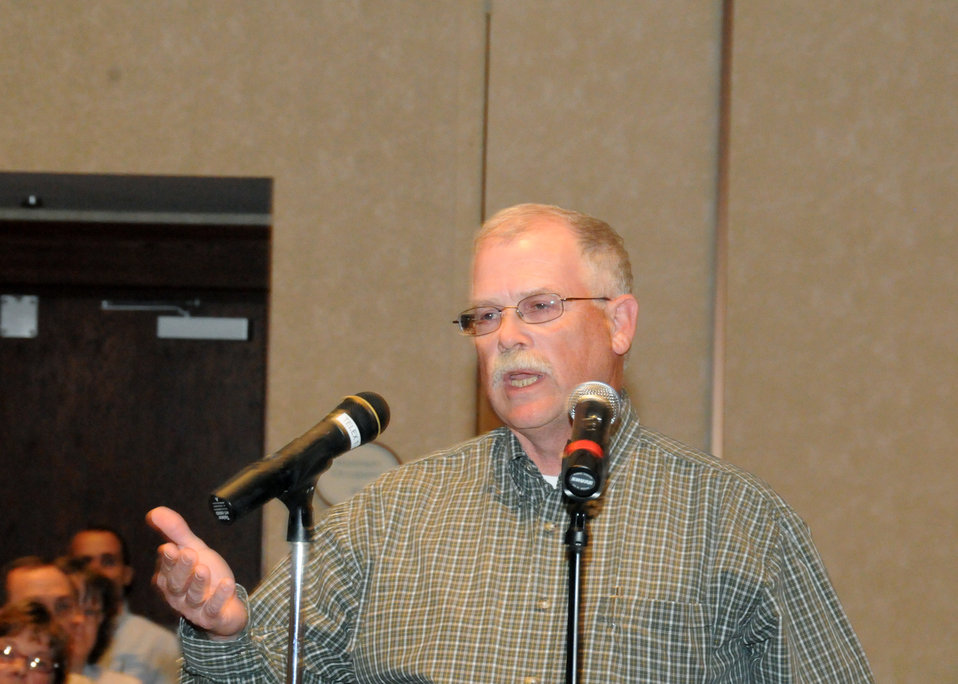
The U. S. Department of Agriculture (USDA) held the third of six Cultural Transformation Employee listening sessions in Kansas City, MO, on Wednesday, April 14, 2010. USDA employees expressed their concerns with issues at the Department and made suggestions for correcting them and improving the image of USDA. USDA photo 10di1309-226.